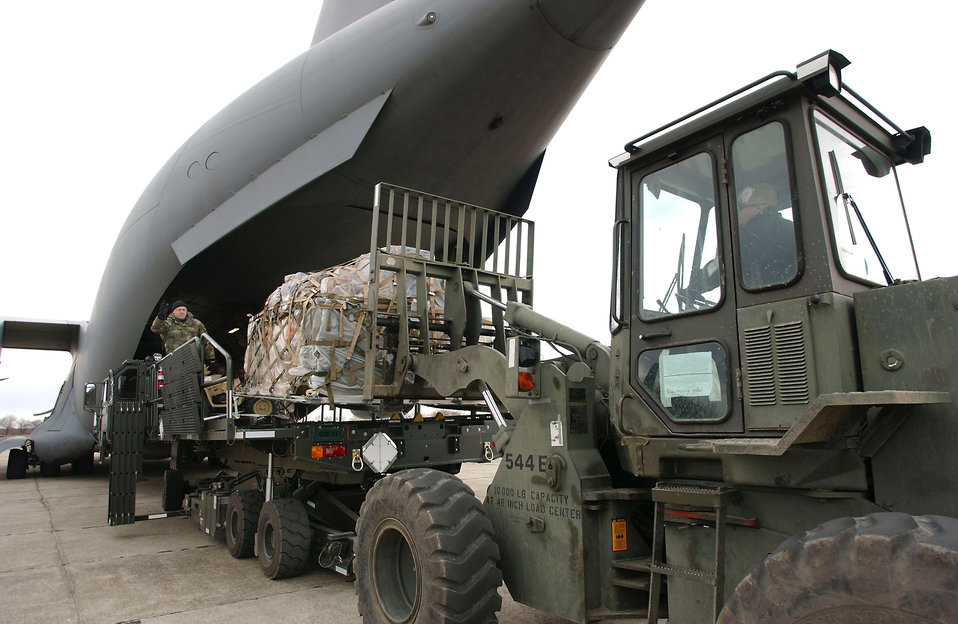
Air bridge support

CONSTANTA, Romania - Airmen from the 349th Tanker Airlift Control Element unload a C-17 Globemaster III from McChord Air Force Base, Wash. This base in Romania is a key link in the air bridge supporting Operation Iraqi Freedom.